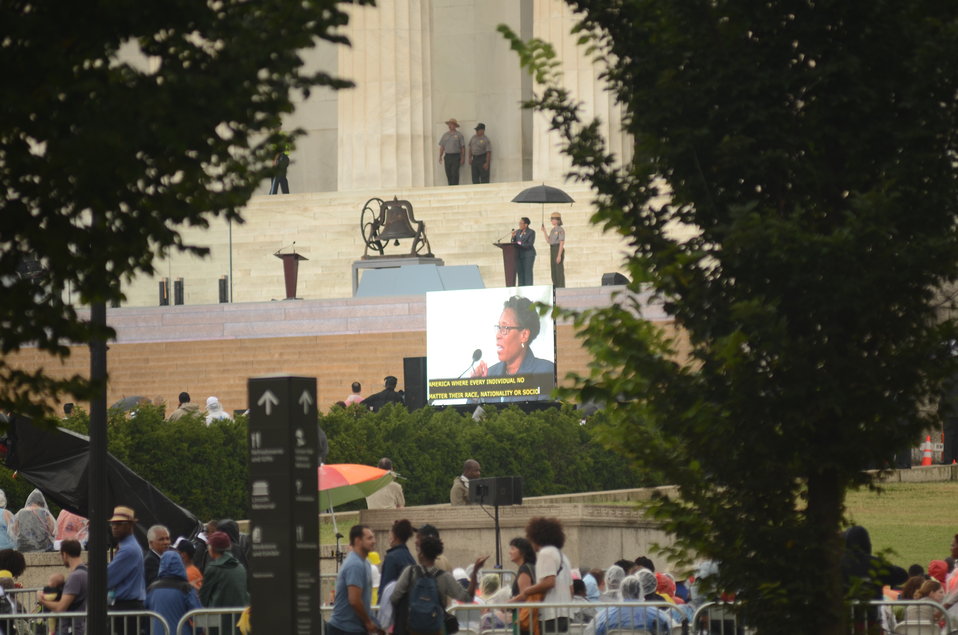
The Chairwoman of the American Black Caucus Rep. Marcia L. Fudge, Ohio Democrat, speaking at the Lincoln Memorial, during the March on Washington, D.C., on Wed., Aug. 28, 2013.